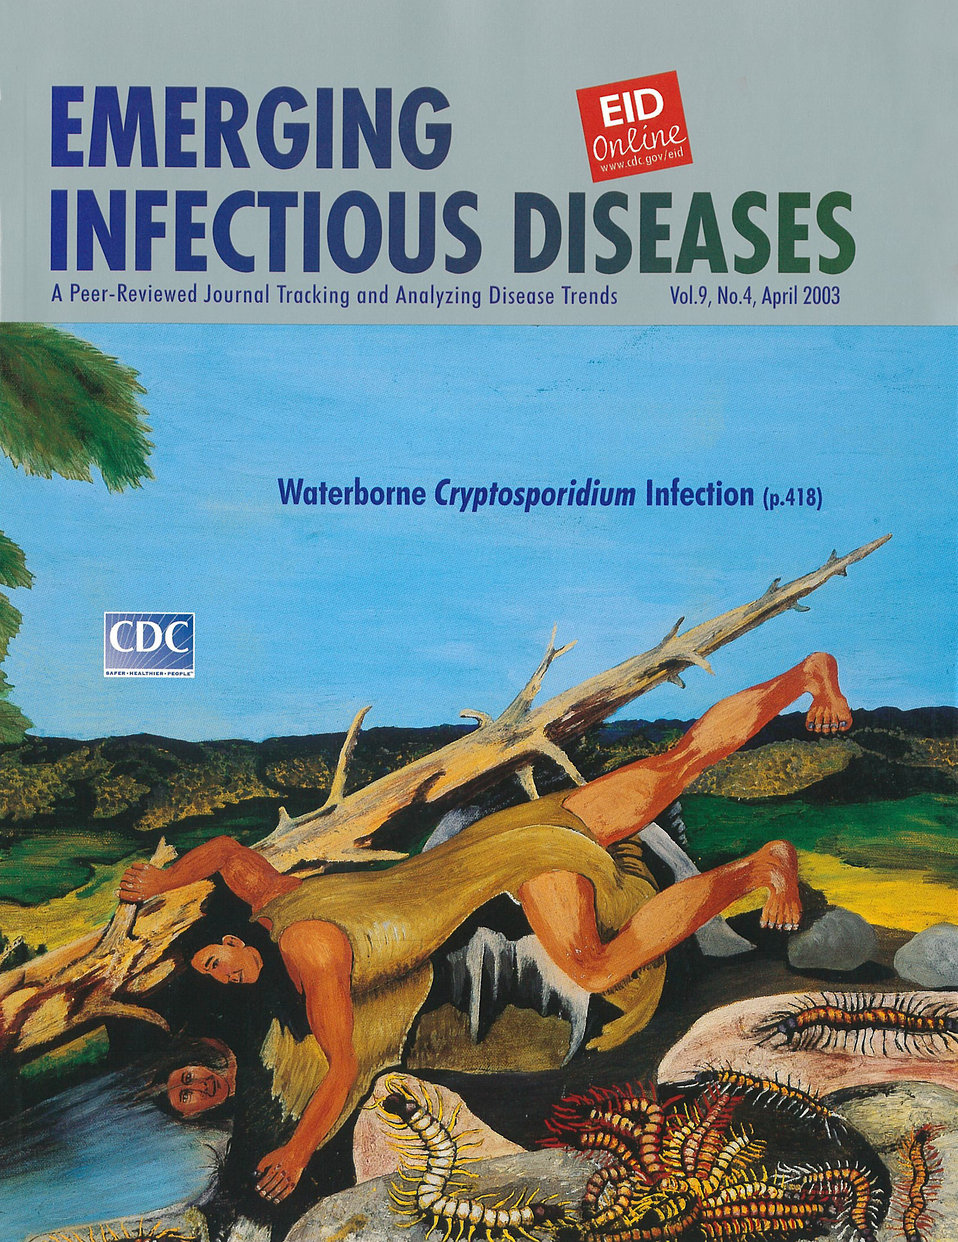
Emerging Infectious Diseases (EID) cover artwork for Volume 9, Number 4, April 2003 issue.